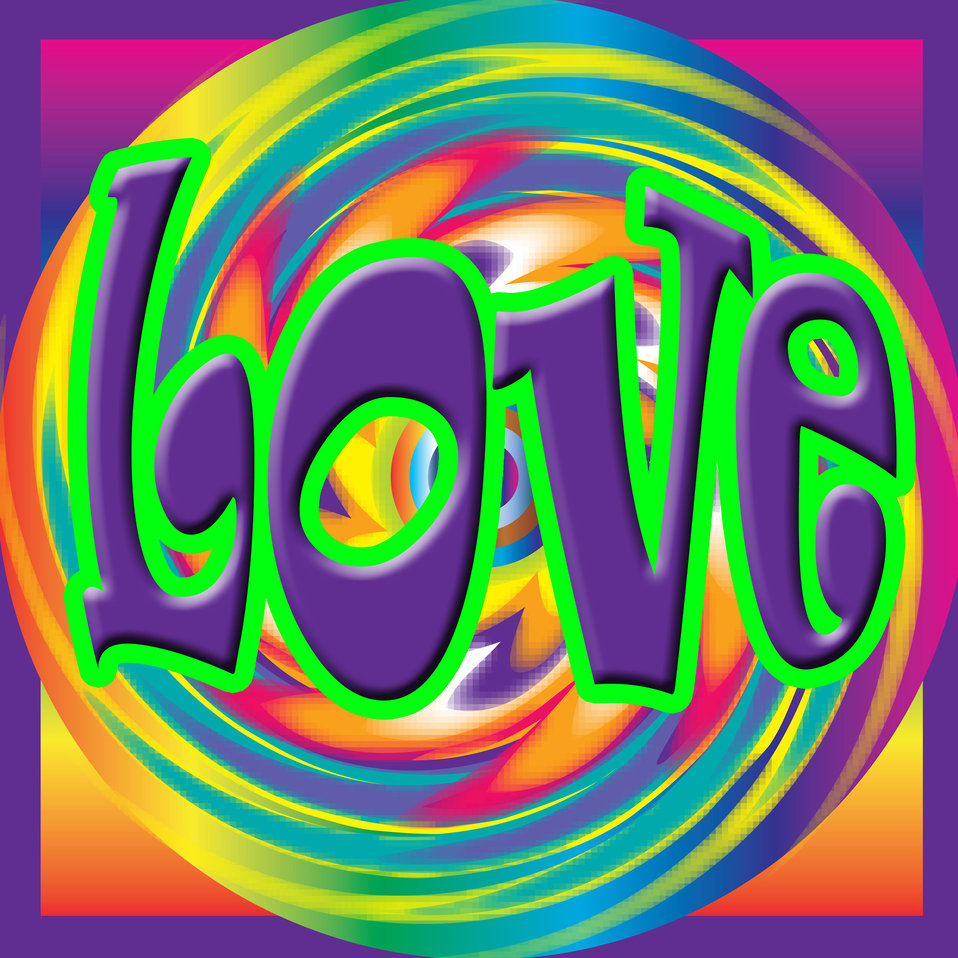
Love... love... love...

Love illustration developed in photoshop 70's style..